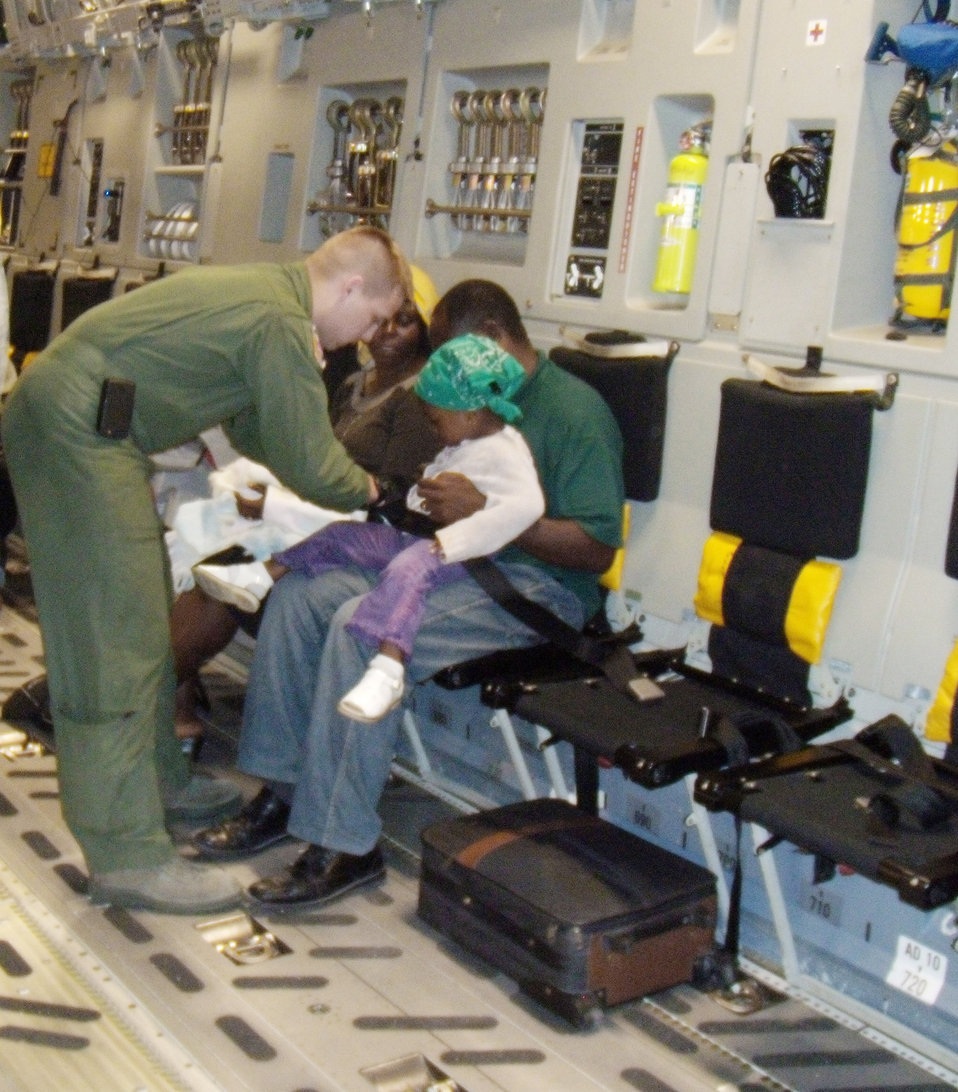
Operation Unified Response

Airman 1st Class Landon Greenwood helps buckle in a young girl being evacuated on a C-17 Globemaster III to the U.S. Jan. 19, 2010, from Port-au-Prince, Haiti,. The C-17 aircrew had delivered 90,000 pounds of cargo and was boarding 36 evacuees in support of Operation Unified Response. Airman Greenwood is a loadmaster with the 3rd Airlift Squadron at Dover Air Force Base, Del.